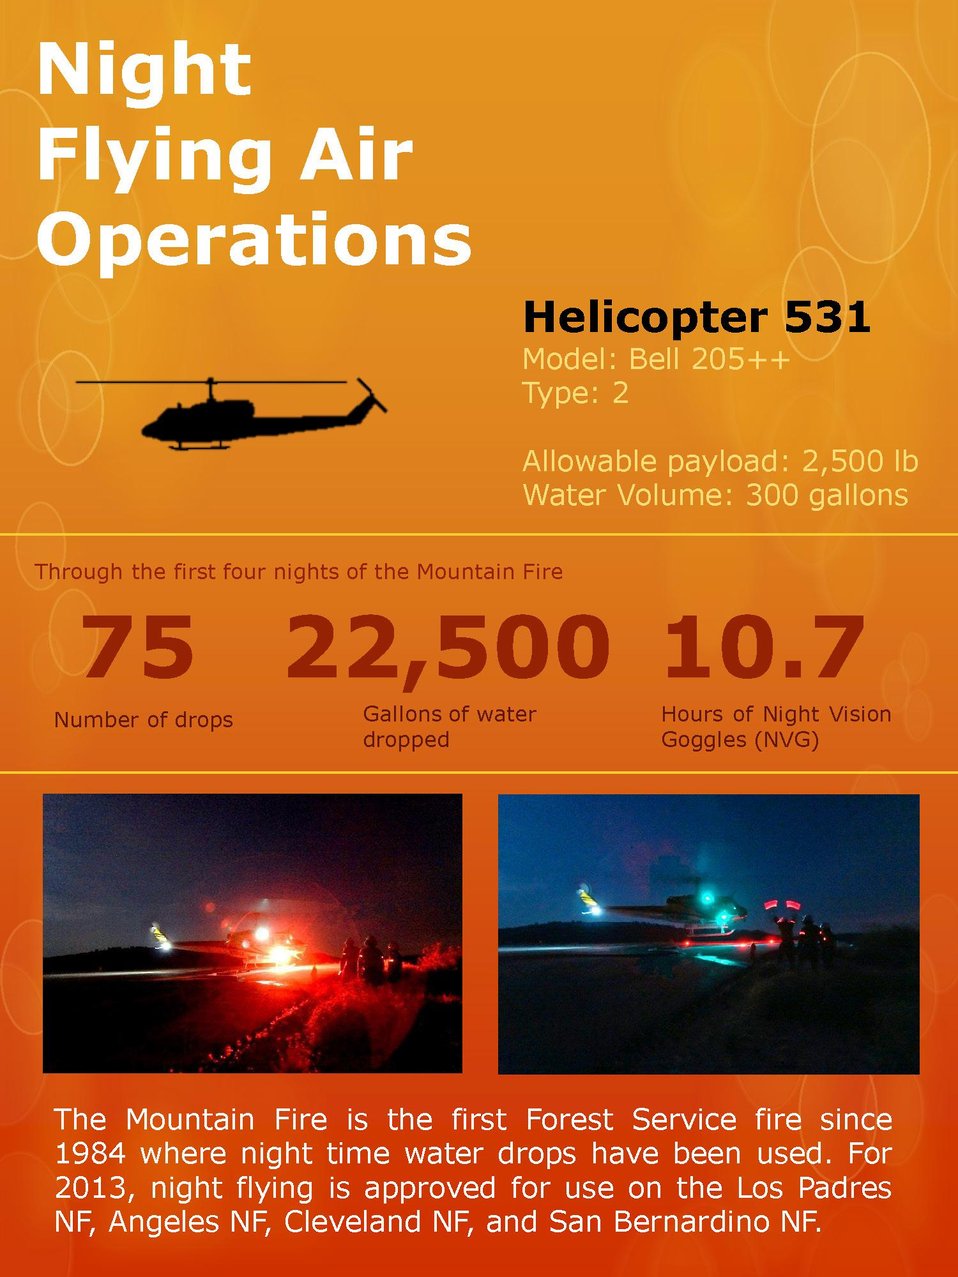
An informational poster describes Helicopter 531 night flying operations at the Mountain Fire in the San Bernardino National Forest, CA. Mountain Fire in the San Bernardino National Forest in California began on Jul. 15, 2013 and its cause is under investigation. The fire has consumed approximately 27, 332 acres. The fire is approximately 85 % contained.